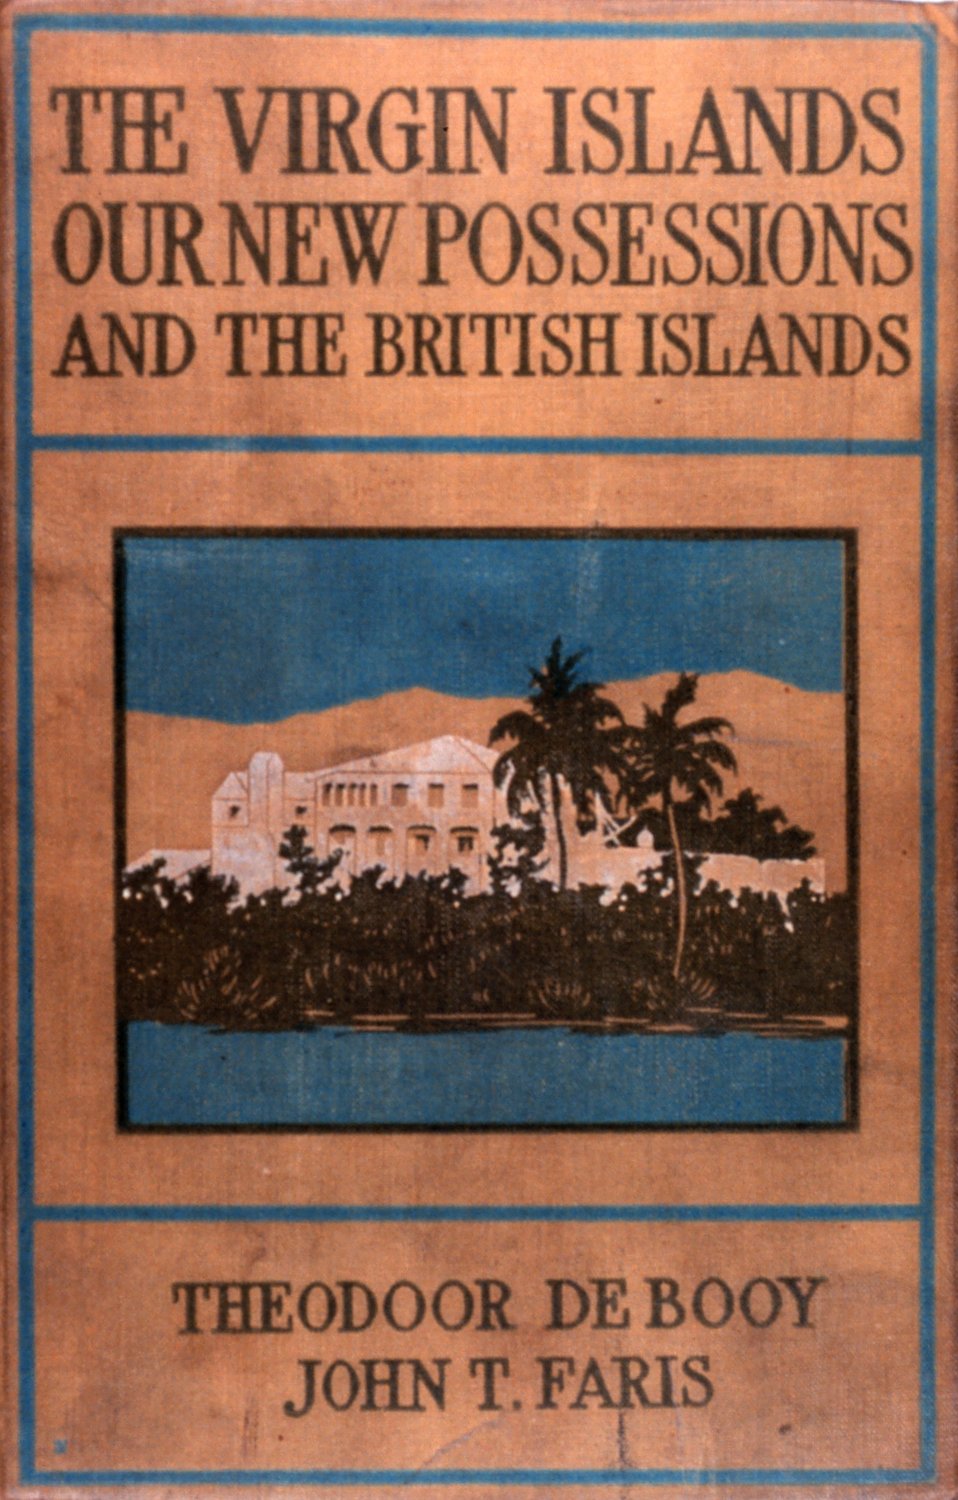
Jacket of 'The Virgin Islands Our New Possessions and the British Islands', by Theodoor De Booy and John T. Faris, 1918. J. B. Lippincott and Company, Philadelphia. Library Call Number C/hc100 V81 B.